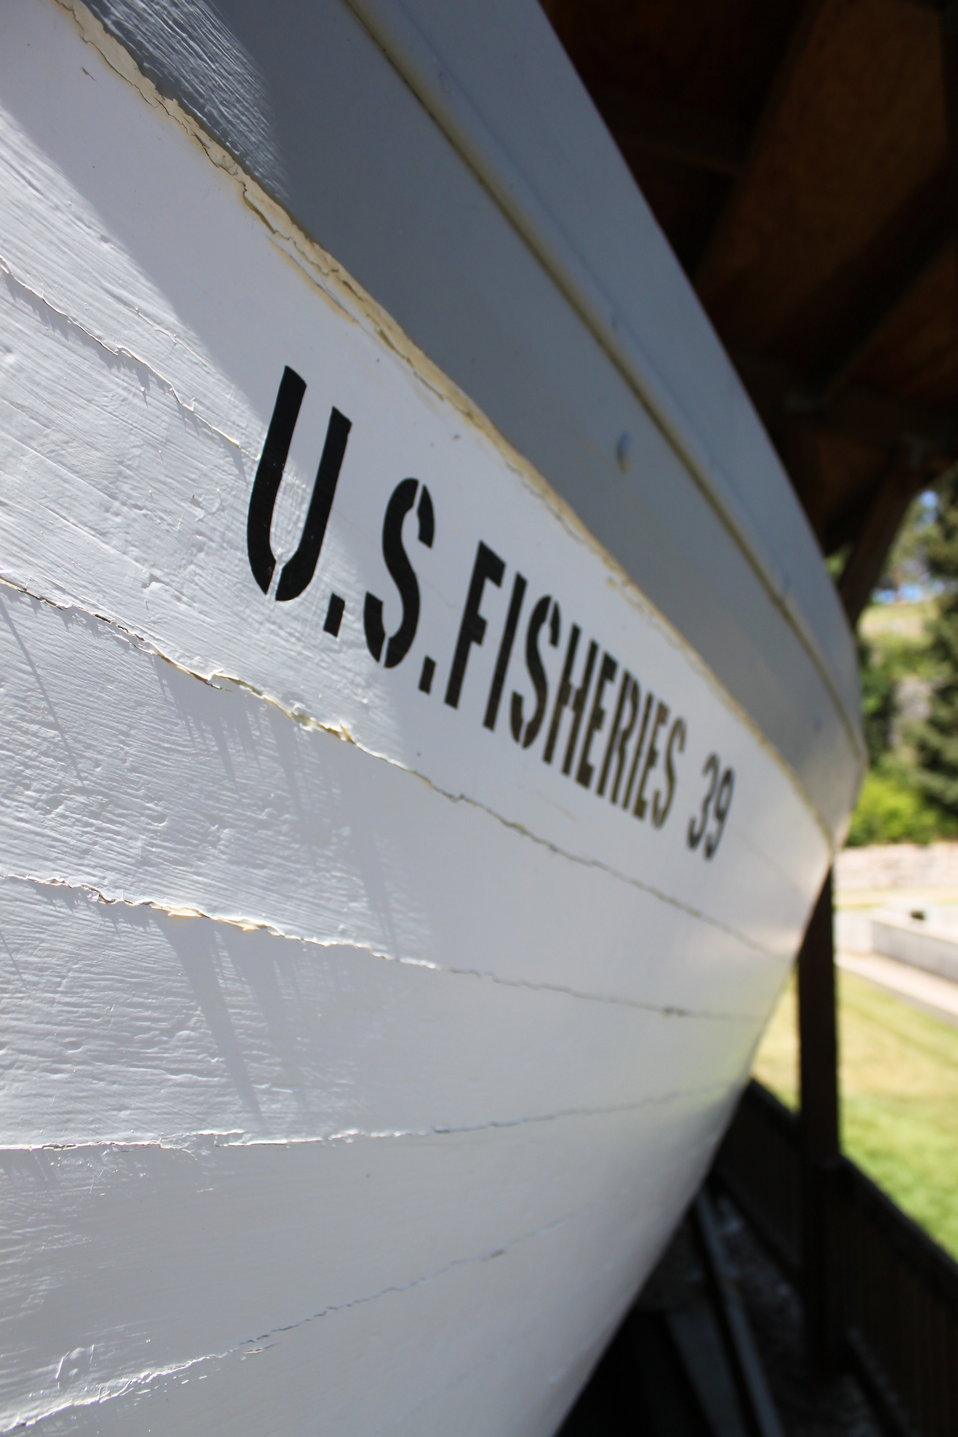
Gunwhale and Bow of #39

She's labeled #39 and operated on lakes in Yellowstone National Park. Workers from the former Spearfish Fish-Cultural Station in Spearfish, South Dakota collected trout spawn from nets fished off this U.S. Bureau of Fisheries boat. The spawn were returned over land to Spearfish. The boat has been restored and is cradled under protective cover on the grounds of D.C. Booth Historic National Fish Hatchery & Archives in Spearfish, South Dakota. It is one of over 175,000 items cataloged in the archives.

Credit: Craig Springer / USFWS

Photo Contest Entry #144